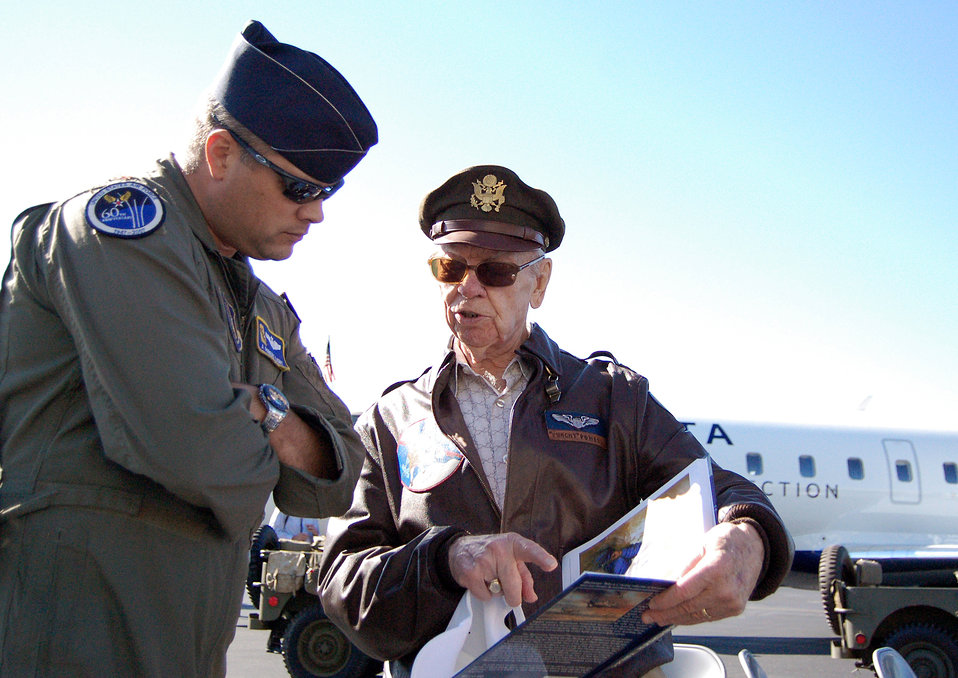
Air Force Week Atlanta wraps up

World War II pilot Bob Powell talks about his book with participants of the Great Georgia Air Show during Air Force Week Atlanta Oct. 12 at Falcon Field in Peachtree City, Ga. Mr. Powell flew the P-51 Mustang during the war and is credited with two confirmed kills. He has since wrote two books about his military career.